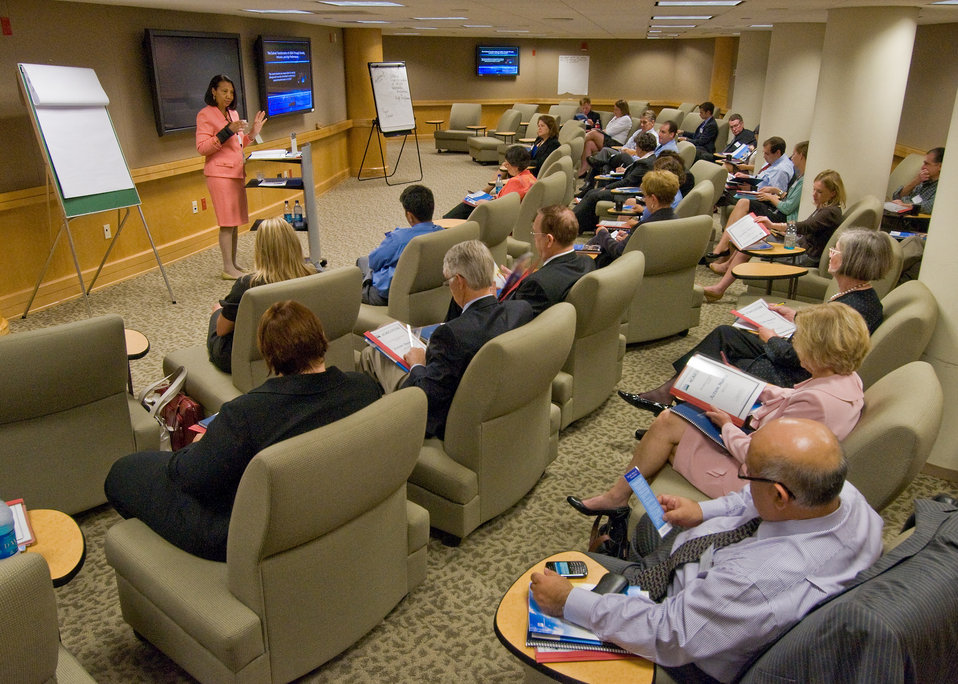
Deputy Assistant Secretary for Administration Dr. Alma Hobbs, explains the purpose of the United States Department of Agriculture, “Cultural Transformation of USDA: Diversity, Inclusion and High Performance” transformational training session to Department of Agriculture employees in Washington, DC, Wednesday, September, 15, 2010. The transformational training sessions are for Department of Agriculture executives, managers and employees to help improve the civil rights of clients and employees. USDA Photo 10di1492-8 by Bob Nichols.